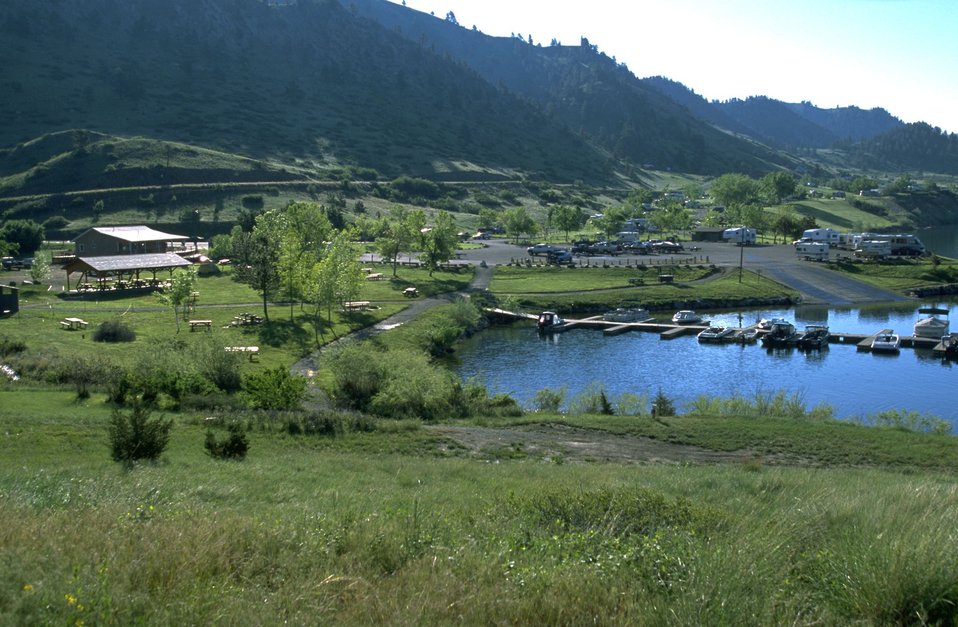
View of the picnic area and marina at Holter Lake Recreation Site